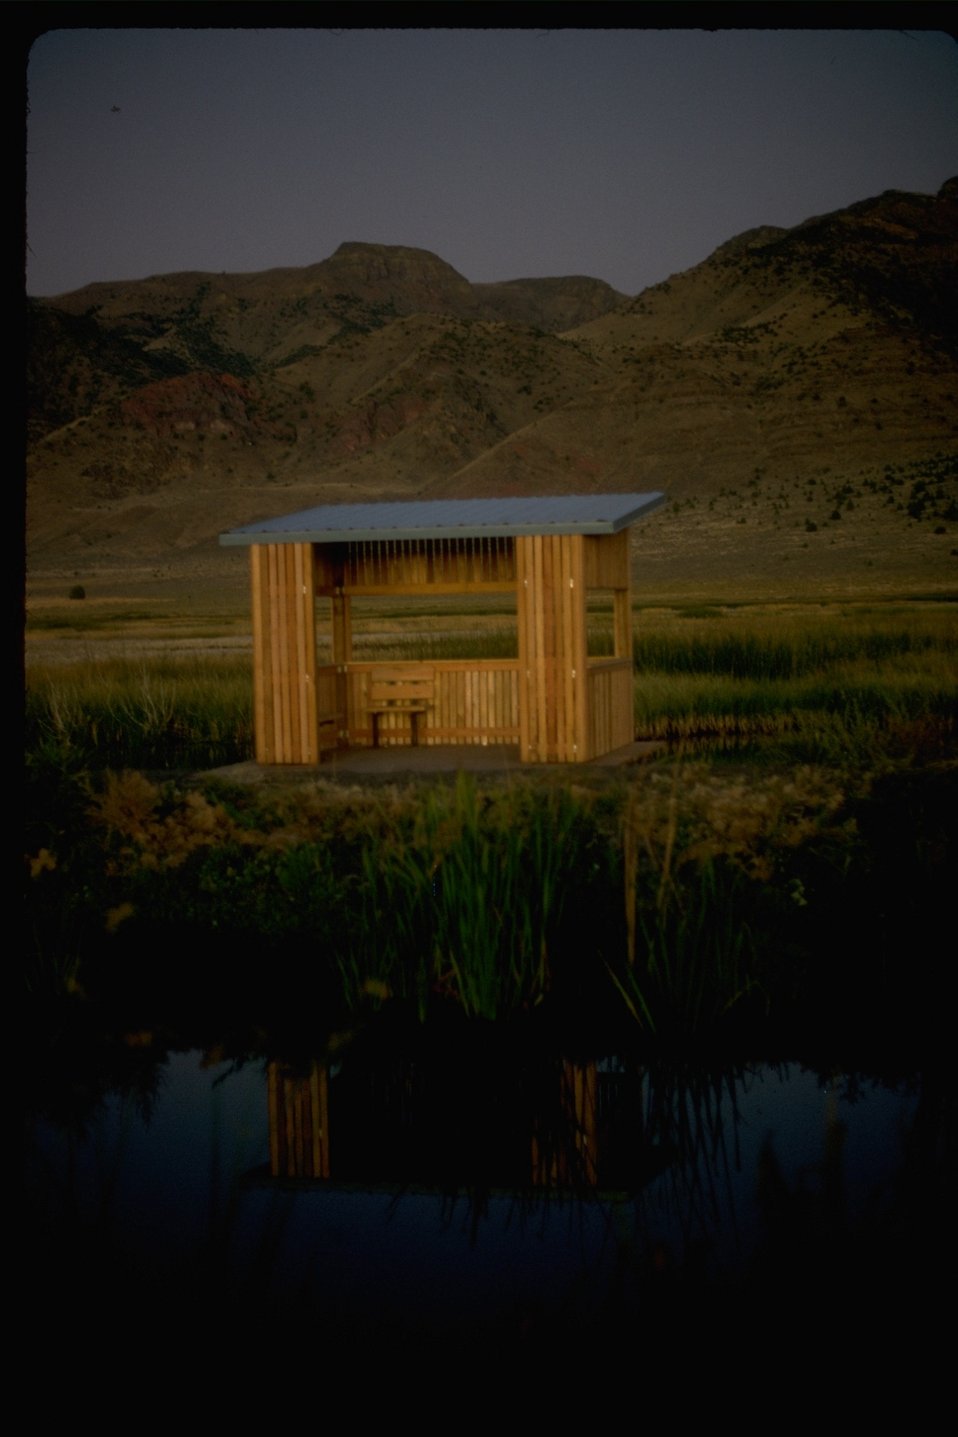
Viewing Blind at Warner Wetlands.